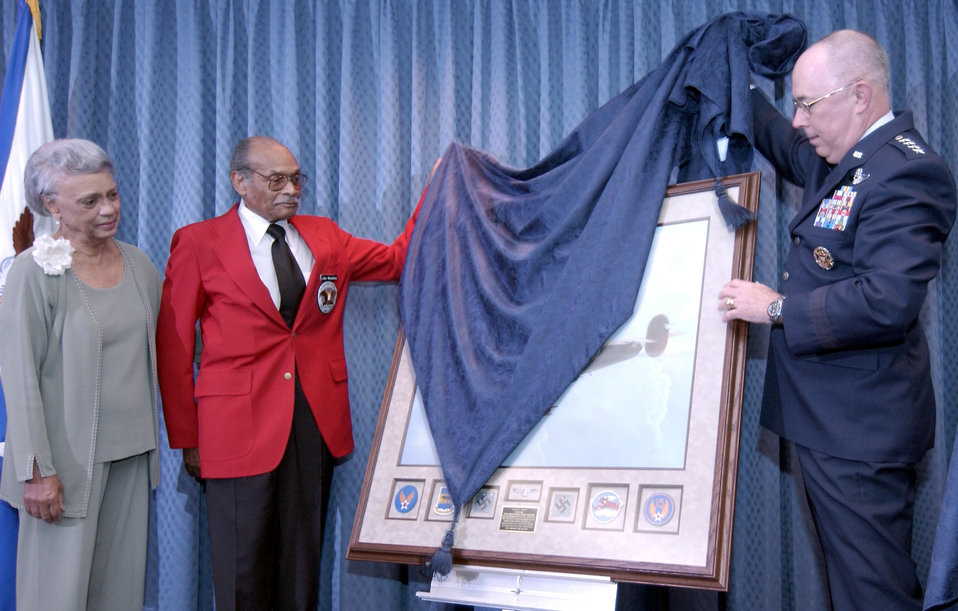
Tuskegee Airman Painting unveiled at Pentagon

WASHINGTON -- Jacqueline Weathers (left) looks on as her husband, retired Lt. Col. Luke Weathers (center), and Air Force Vice Chief of Staff Gen. T. Michael Moseley unveil a painting during a ceremony June 24 in the Pentagon. The painting pays tribute to the unblemished record of the famed 332nd Fighter Group of Tuskegee Airman.